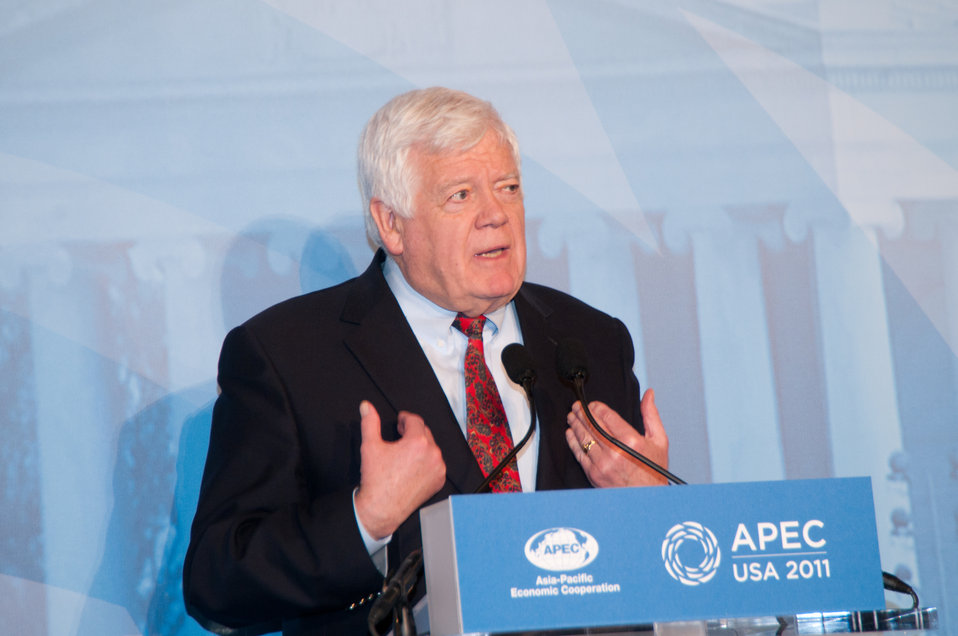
Congressman McDermott Speaks During Welcome Reception

Congressman Jim McDermott of Washington speaks at the First Senior Officials Meeting (SOM1) and Related Meetings of the APEC 2011 USA Host Year during the welcome reception at the Ronald Reagan Building in Washington, D.C., on March 9, 2011. [Fredde Lieberman photo]